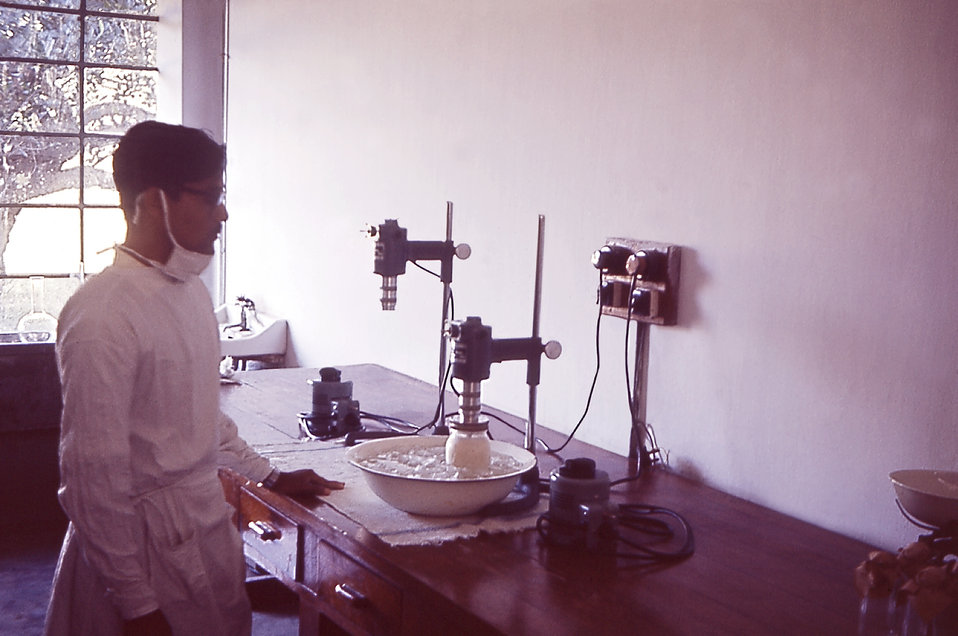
This 1964 photograph was captured during the process of producing smallpox vaccine in a West Pakistan vaccine laboratory.